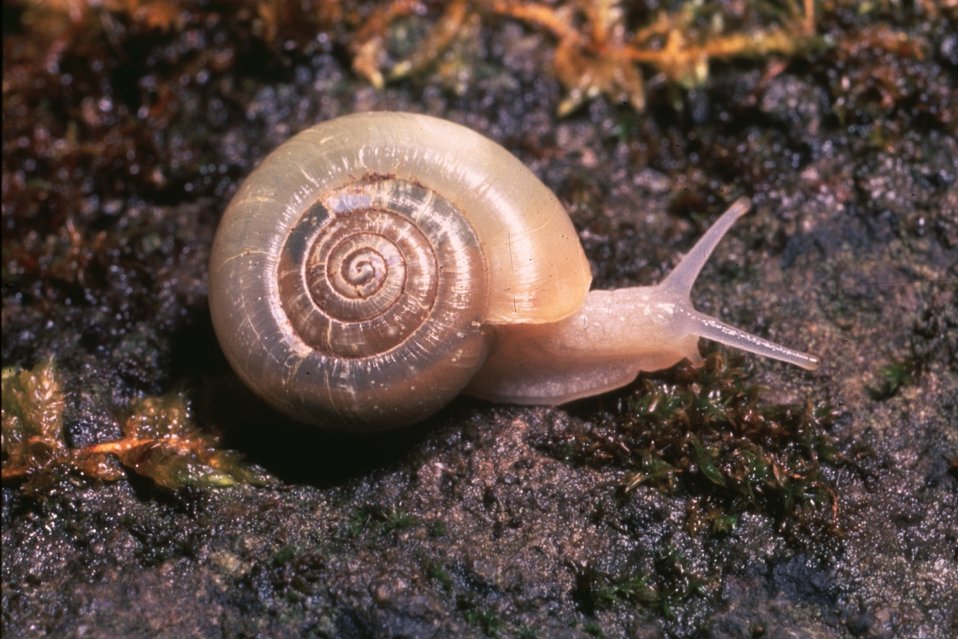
Oregon megomphix (Megomphix hemphilli).